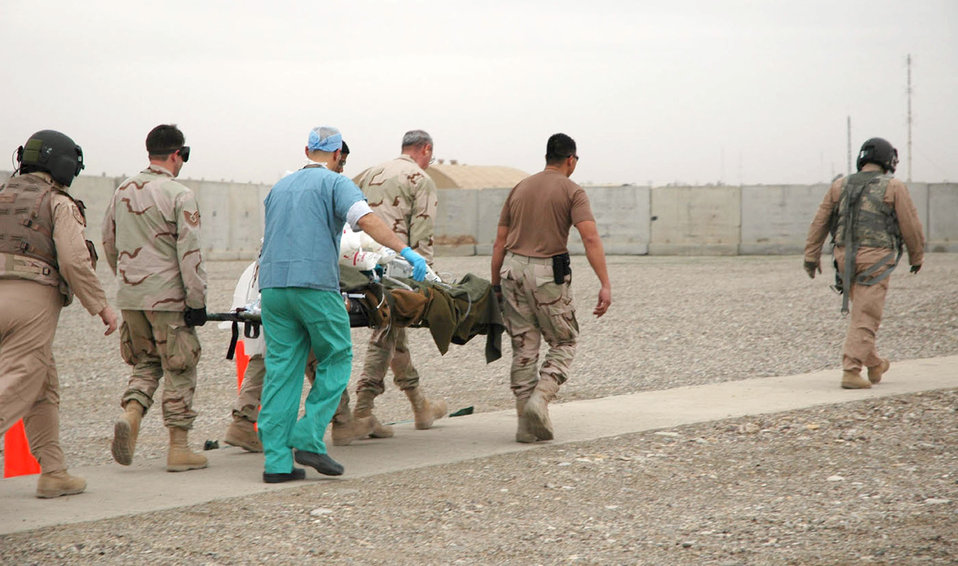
Medical team shares invisible bond

Airmen of the 506th Expeditionary Medical Squadron evacuate a patient at Kirkuk Air Base, Iraq, on Friday, March 24, 2006.